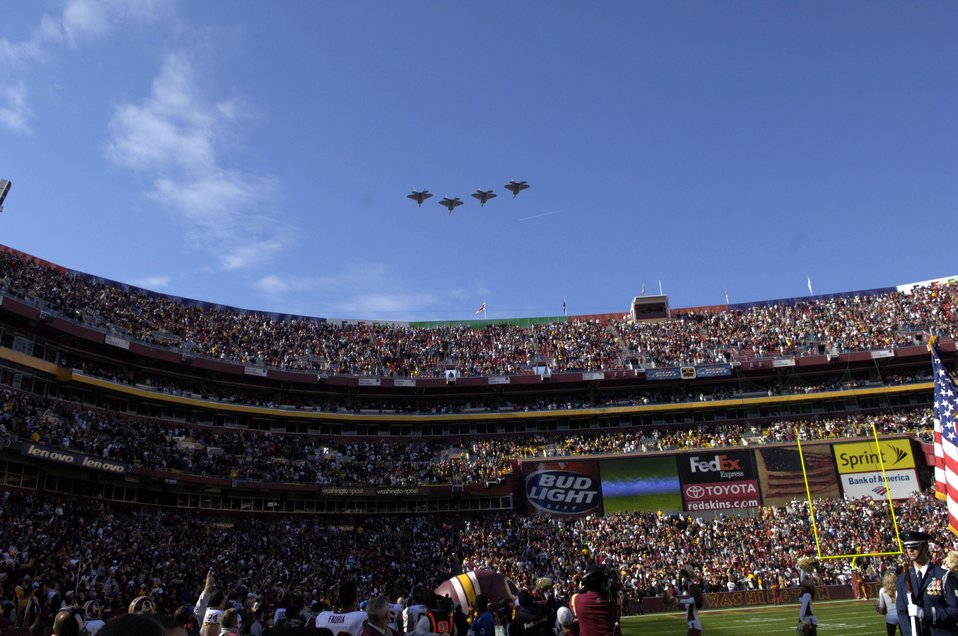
NFL hosts Air Force Appreciation Day

Four F-22 Raptors from the 1st Fighter Wing at Langley Air Force Base, Va., fly over FedEx Field in Landover, Md. on Nov. 5 as Secretary of the Air Force Michael W. Wynne officiates the coin toss for the Washington Redskins vs. Dallas Cowboys football game. The flyover was just one of several activities that took place during Air Force Appreciation Day there.